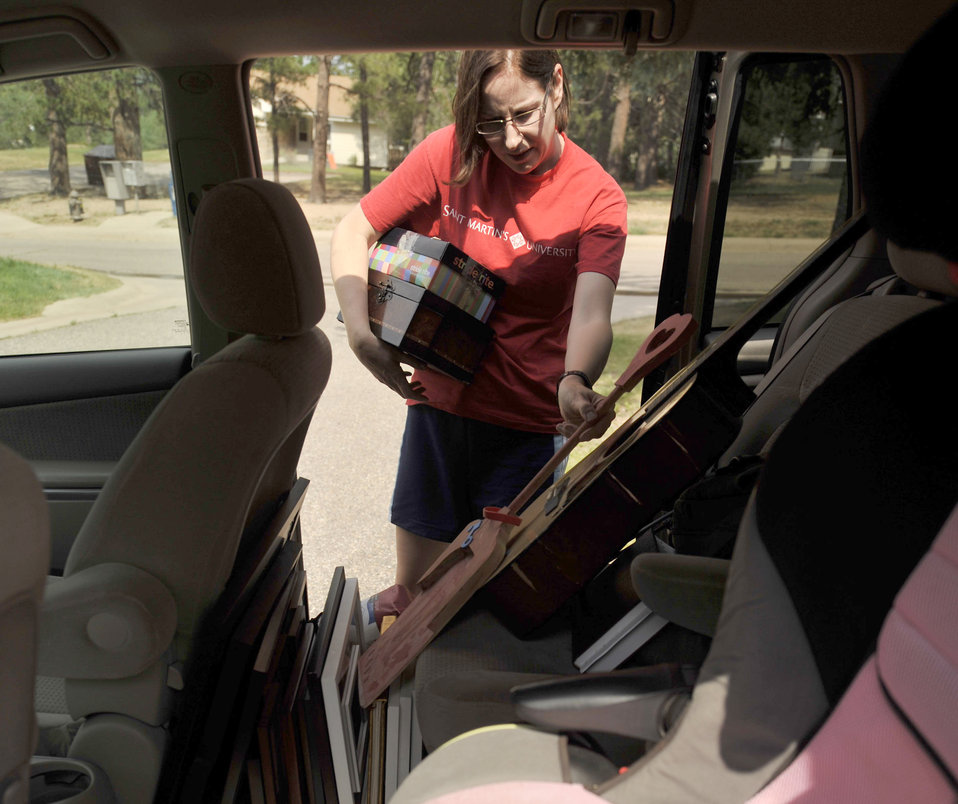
Waldo Canyon Fires

Tammy Rich gathers personal belongings from her vehicle June 29, 2012, after residents were allowed to return to their homes at the Air Force Academy, Colo. Rich and her family, along with all everyone else residing on the Academy, were forced to evacuate their homes because of the Waldo Canyon fire that was threatening the base.